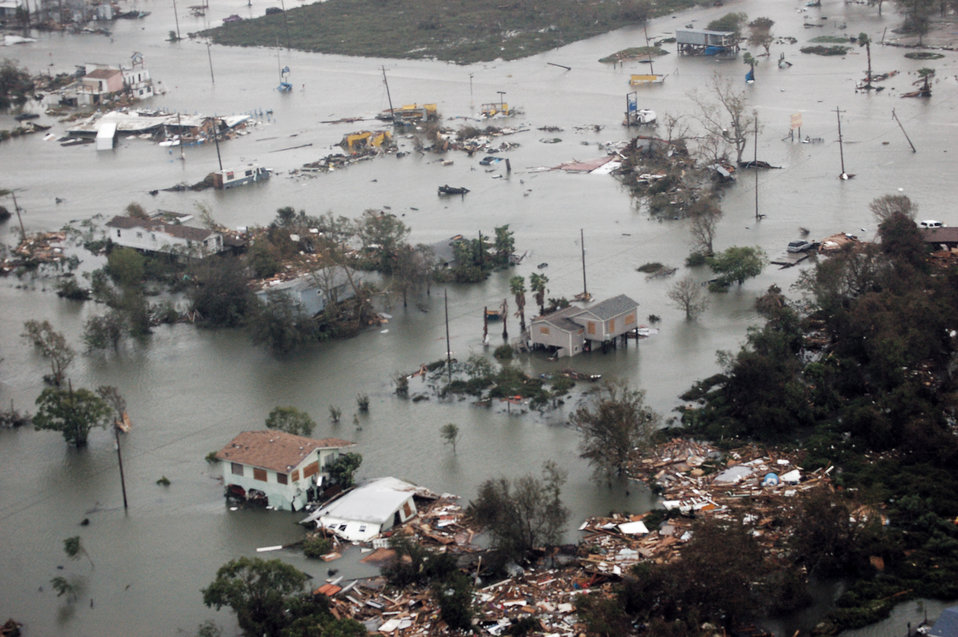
Airmen survey Ike damage

Airmen aboard an HH-60G Pave Hawk survey the damage caused by Hurricane Ike Sept. 13 around Galveston, Texas. Airmen from across the Air Force are deployed to the 331st Air Expeditionary Group at Randolph Air Force Base, Texas, to assist with rescue operations.